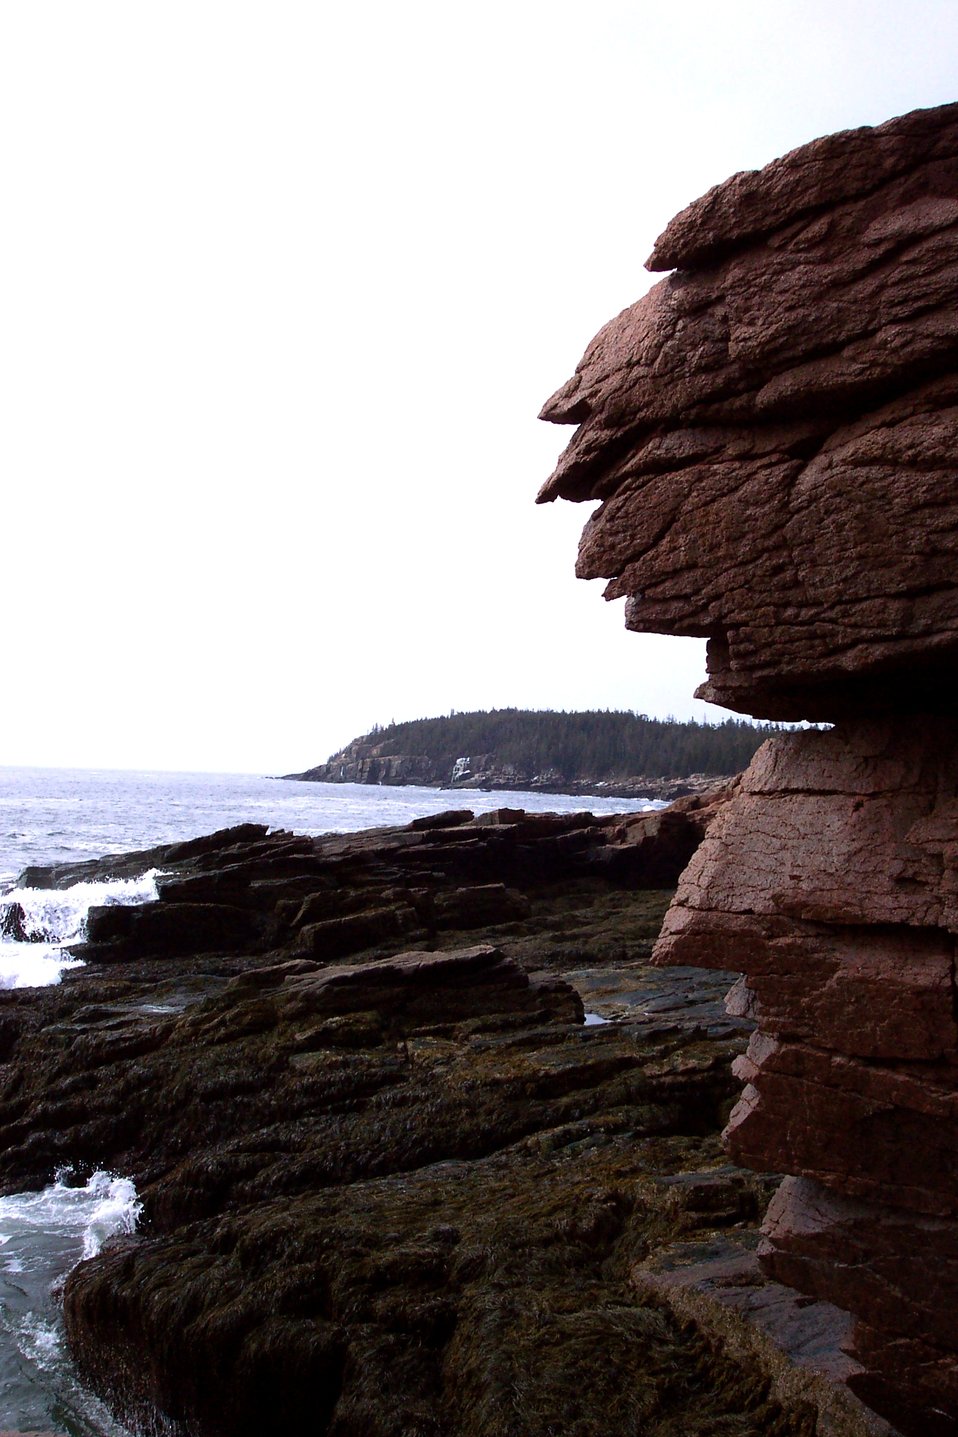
The view towards Otter Cliffs from Thunder Hole.